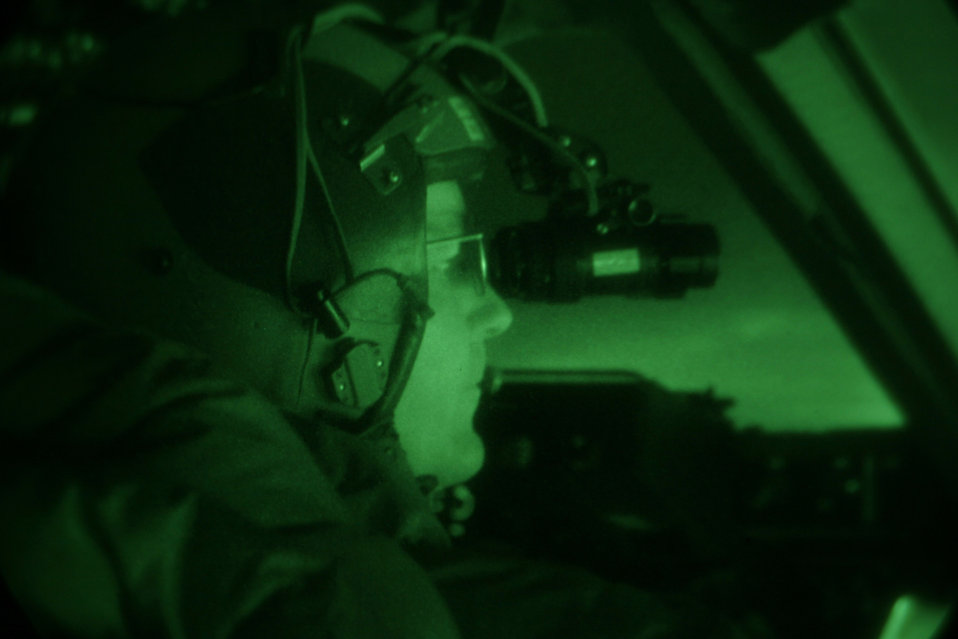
C-17 crew makes history in Antarctica

Lt. Col. Robert Weichert looks out over the ice after a night vision-assisted landing on Pegasus Ice Runway near McMurdo Station, Antarctica, on Sept. 11. Colonel Weichert is part of a crew testing the concept of of using night vision technology in combination with reflective cones and limited electrical lighting to land safely on the ice runway after dark. The mission was conducted by Joint Task Force Support Forces Antarctica, headquartered at Hickam Air Force Base, Hawaii, and led by 13th Air Force. The joint task force is currently conducting Operation Deep Freeze in support of the National Science Foundation and U.S. Antarctic Program. Colonel Weichert is a C-17 evaluator pilot with the 313th Airlift Squadron at McChord AFB, Wash.